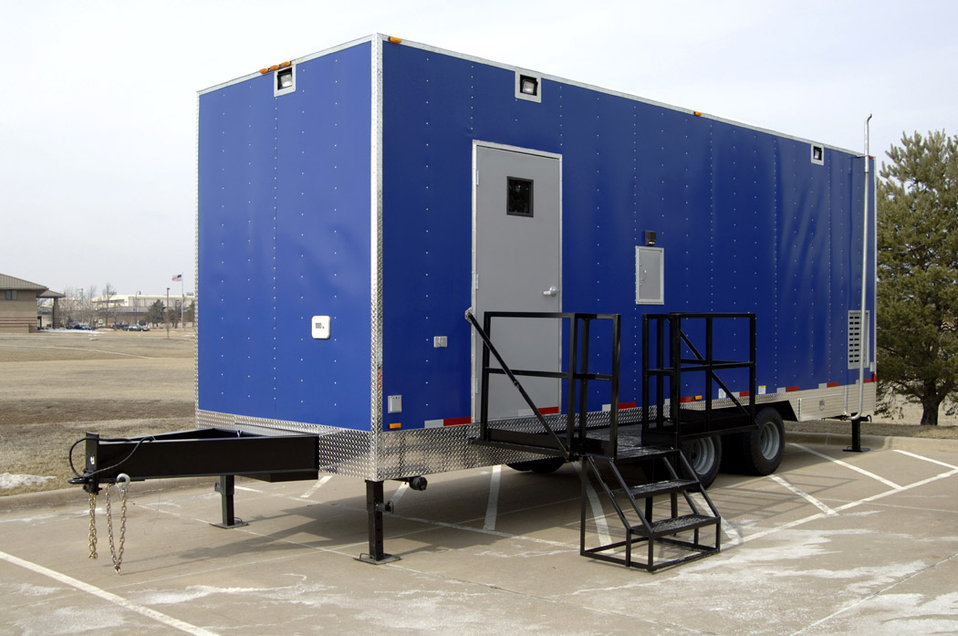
Trailer equipped for rapid response to biological agents

Officials at McConnell Air Force Base, Kan., accepted the Air Force's first laboratory response team trailer during a ceremony Feb. 6. The trailer is equipped with the Joint Biological Agent Identification and Diagnostic System, which can provide rapid analysis of biological agents, an essential capability during emergencies.